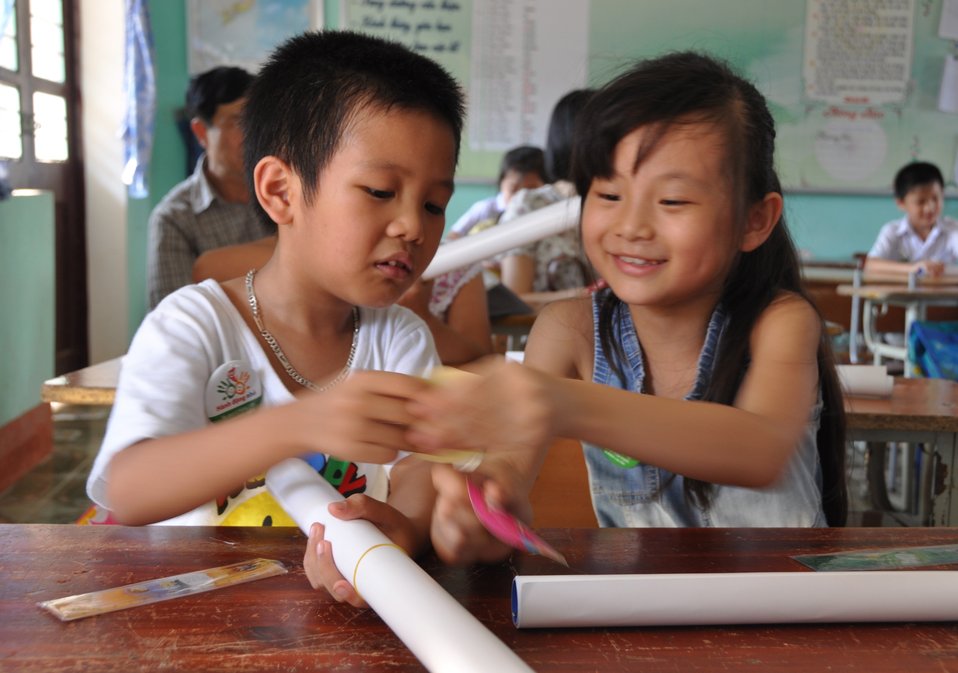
USAID supports deworming education and medication distribution in Bac Giang Province

May 20, 2013